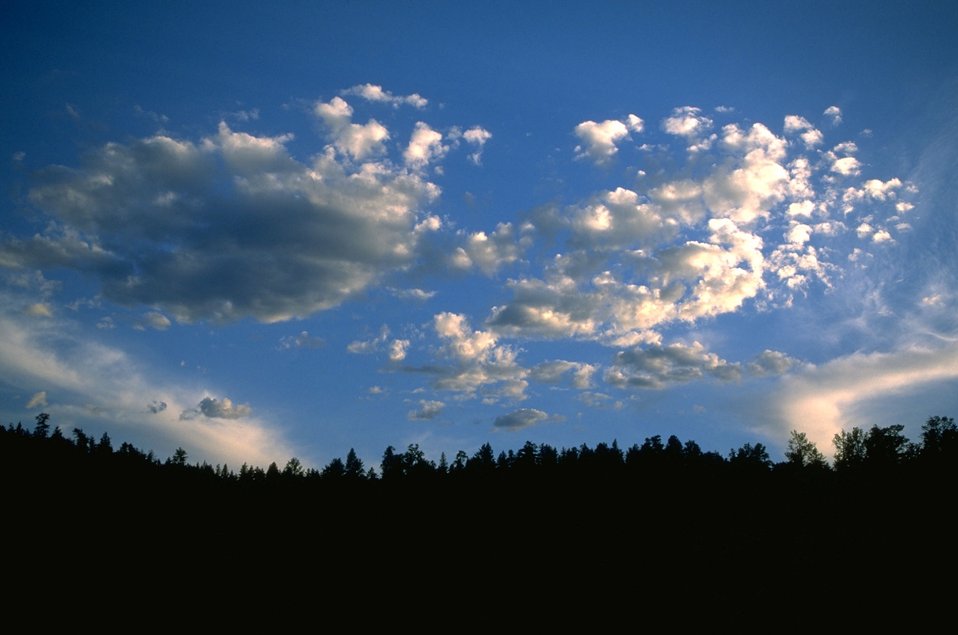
Missouri Breaks topography/scenery